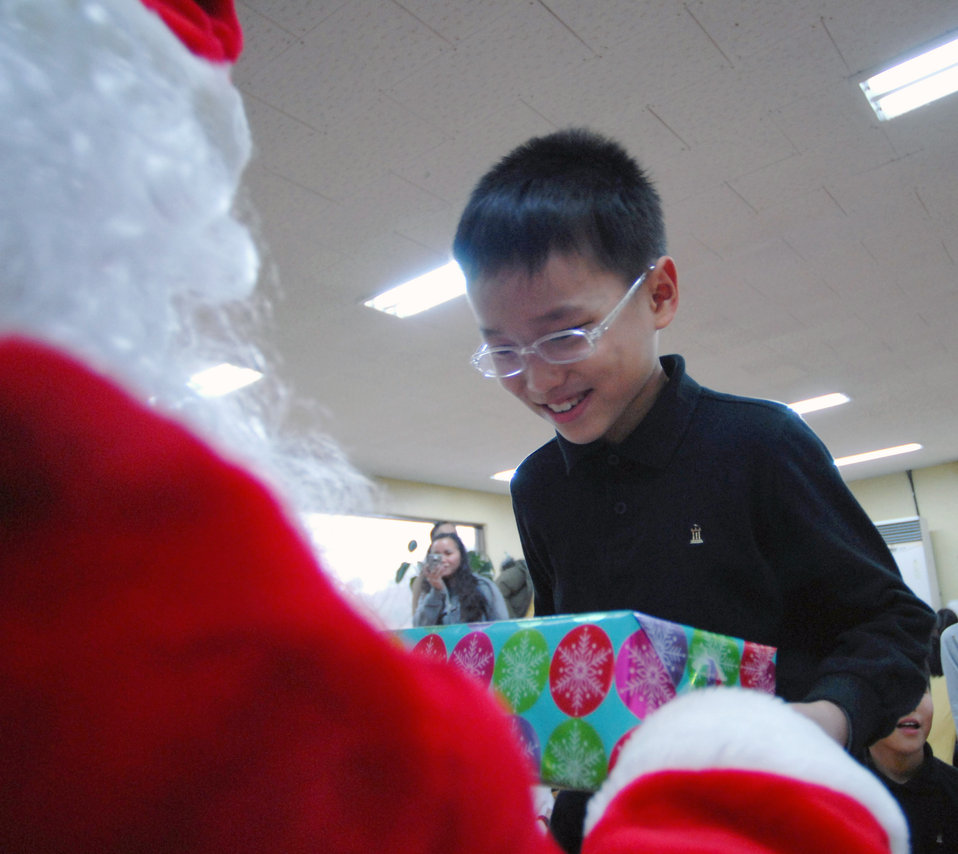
Airmen deliver Christmas to South Korean orphanage

Santa, played by Tech. Sgt. John Craven, hands out a gift to a Kae Jong orphan Dec. 15 in Kae Jong, South Korea. Airmen from Kunsan Air Base, South Korea, spent the afternoon handing out gifts, coloring, eating, and playing with children during an Airmen Committed to Excellence-sponsored trip. The Airmen donated various gifts to include beanie babies and a PlayStation 2.